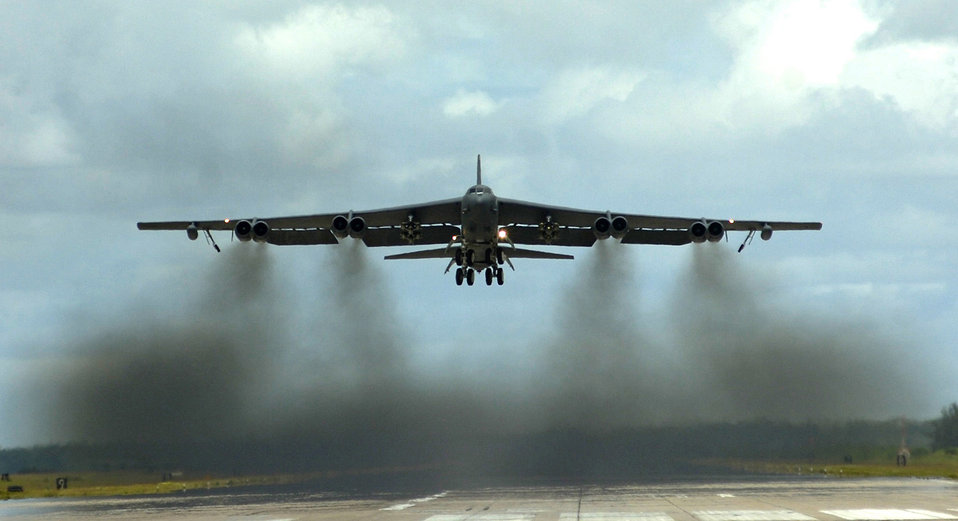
B-52 support

A B-52 Stratofortress takes off Wednesday, April 13, 2006, from a forward operating location in Southwest Asia. The B-52s are seeing increased operations tempo while providing close-air support for Operation Mountain Lion.